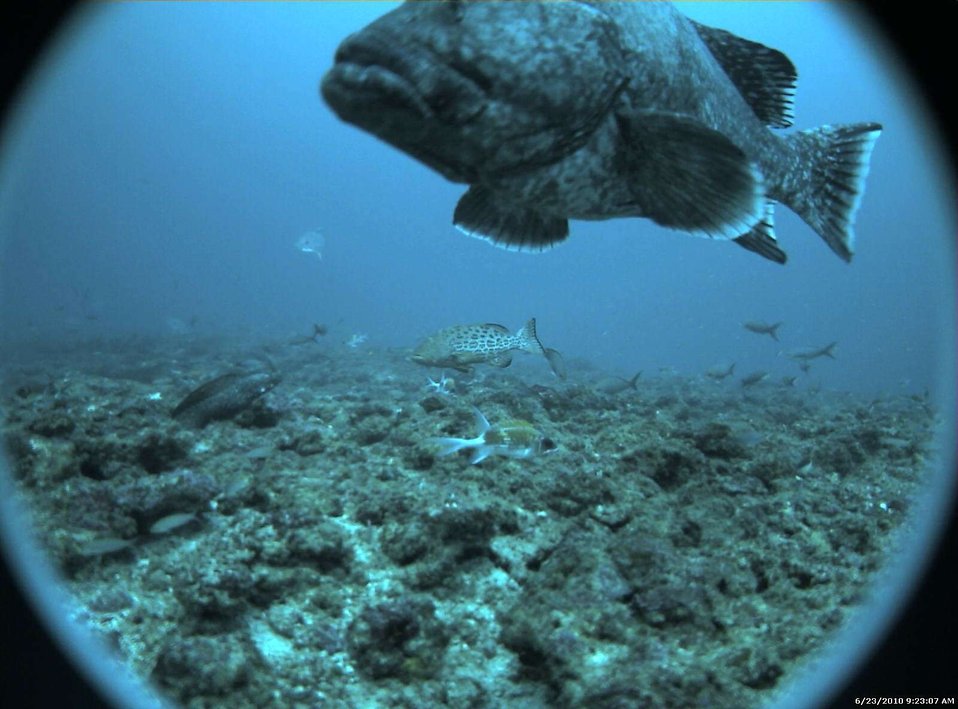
Marbled grouper (Dermatolepis inermis) in foreground; scamp grouper (Mycteroperca phenax) in center distance; and assemblage of other fish.